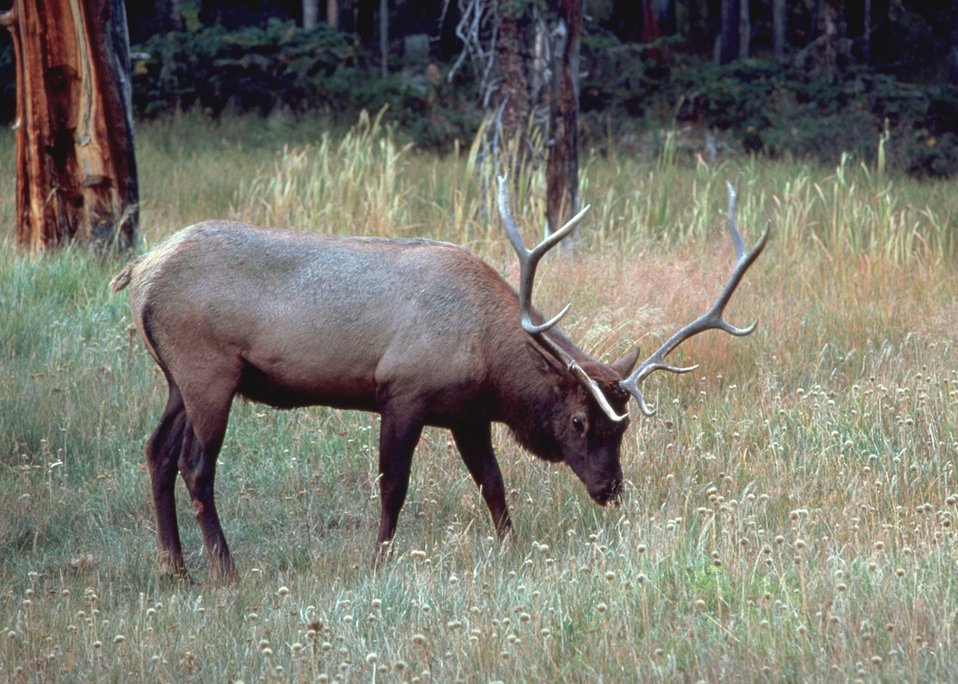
A grazing elk.